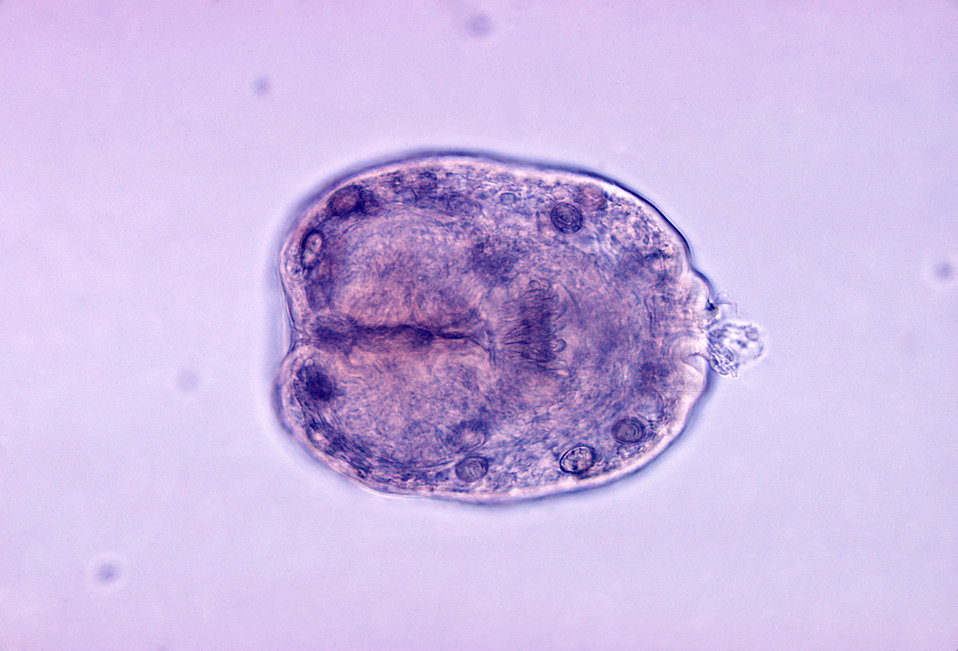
Scolex of Echinococcus granulosus from hydatid cyst.